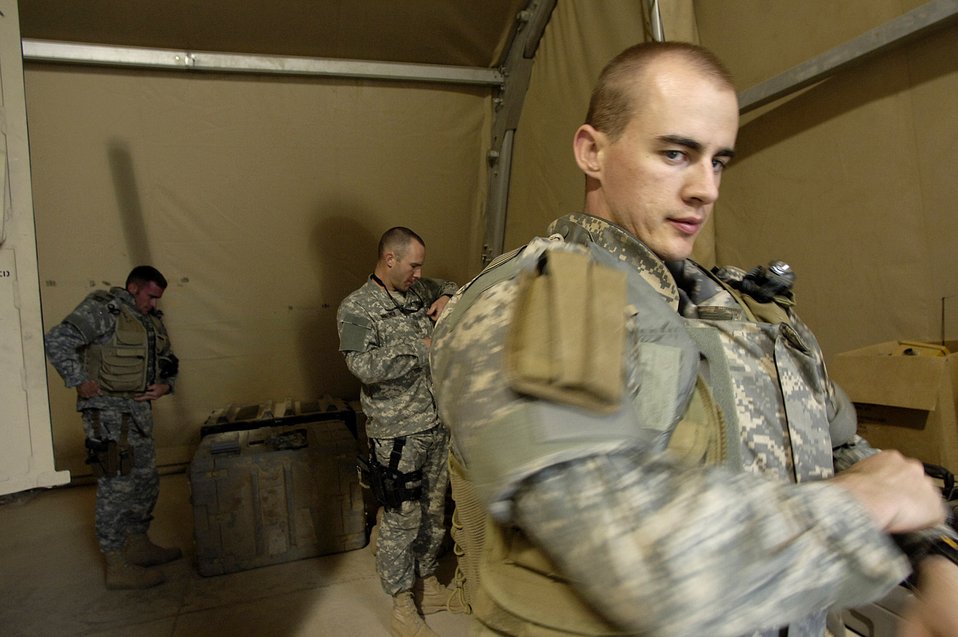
Solemn service

Senior Airman William Newman pictured here donning protective equipment prior to an